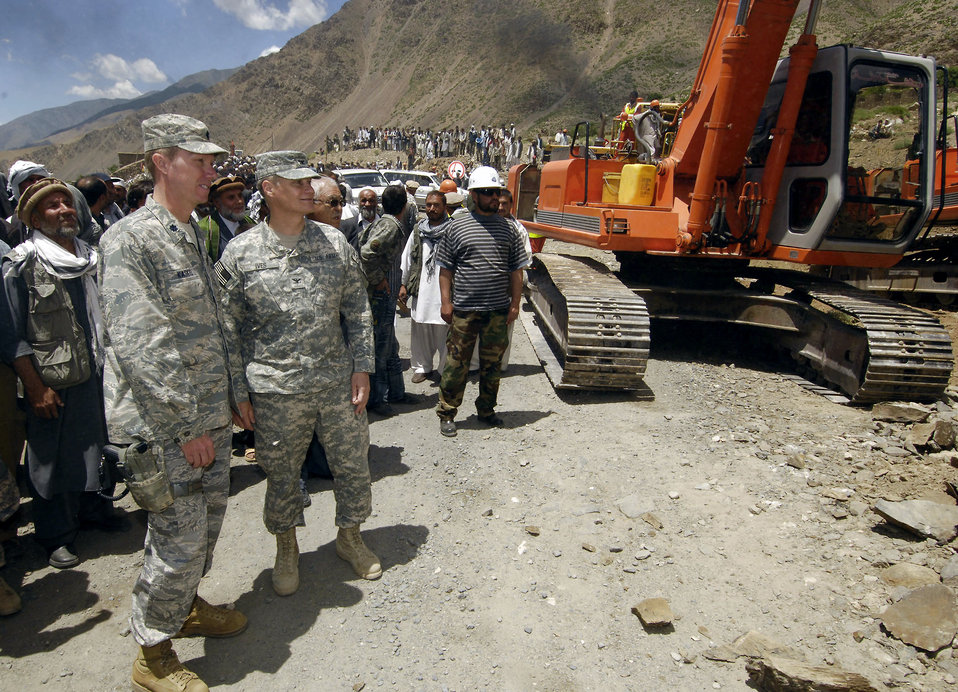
New road brings prosperity to Afghan province

Lt. Col. Russell Kaskel and Army Col. Jonathan Ives lead a group of more than 1,000 Panjshiris to where the new $6 million Barak to Khenj road will start construction May 28 in Barak of the Bazarak District of the Panjshir province in Afghanistan. The 18-kilometer, two-lane road is expected to be completed in March 2009. Colonel Kaskel is the Panjshir Provincial Reconstruction Team commander, and Colonel Ives is the Task Force Cincinnatus commander.